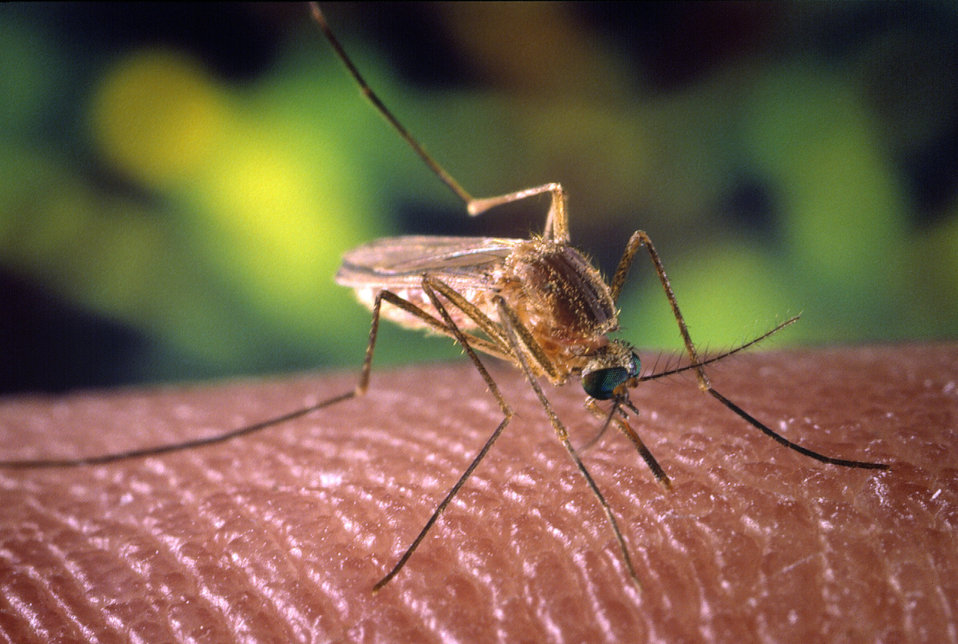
A Culex quinquefasciatus mosquito on a human finger.